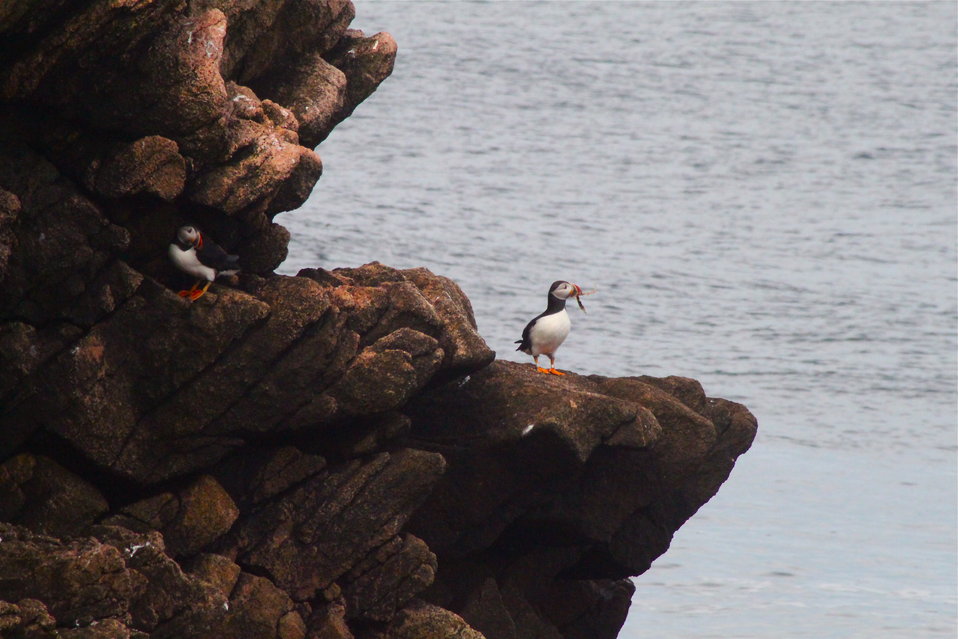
Puffin with Vegetation